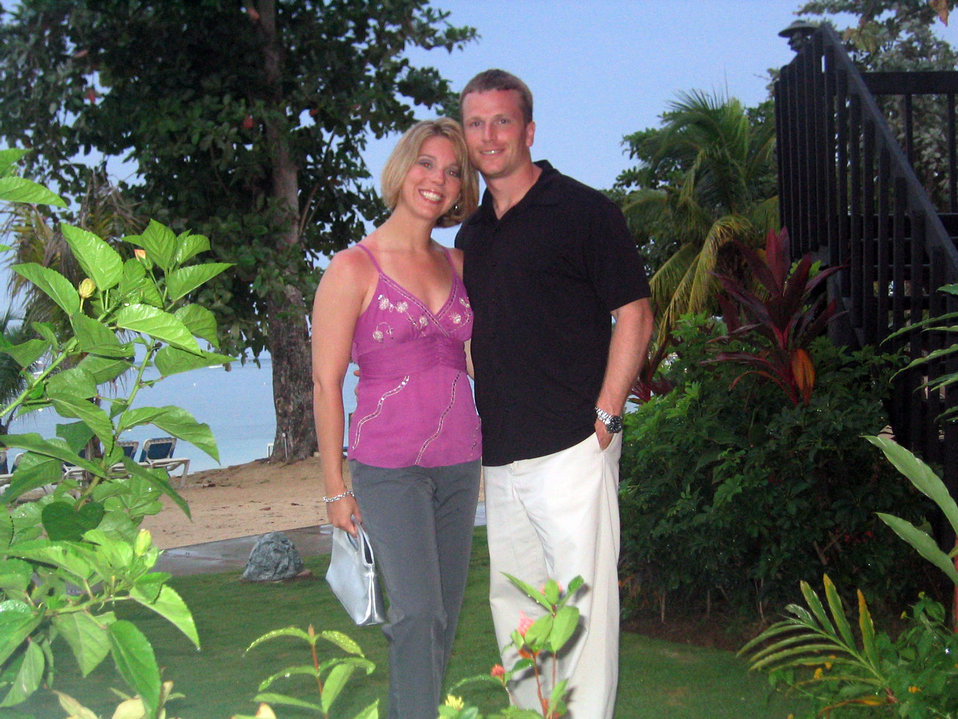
Vance couple selected to pilot B-2s

JAMAICA (AFPN) -- Capts. Rob and Beth Makros, T-38 instructor pilots with the 25th Flying Training Squadron, Vance Air Force Base, Okla., spend some time here on vacation. They recently were selected for assignment to the 509th Bomb Wing at Whiteman AFB, Mo., as B-2 Spirit bomber pilots.